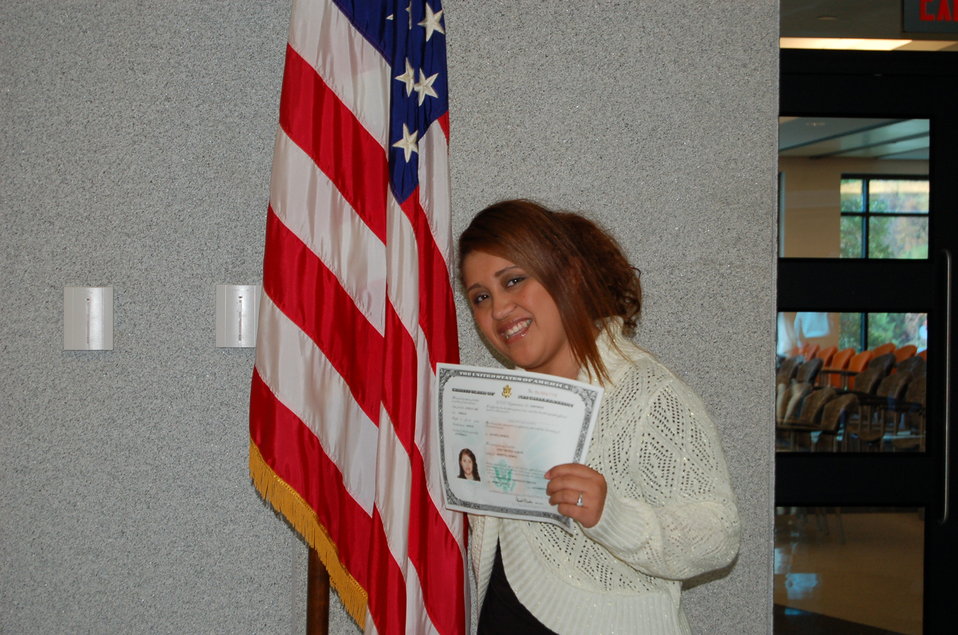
New Citizens